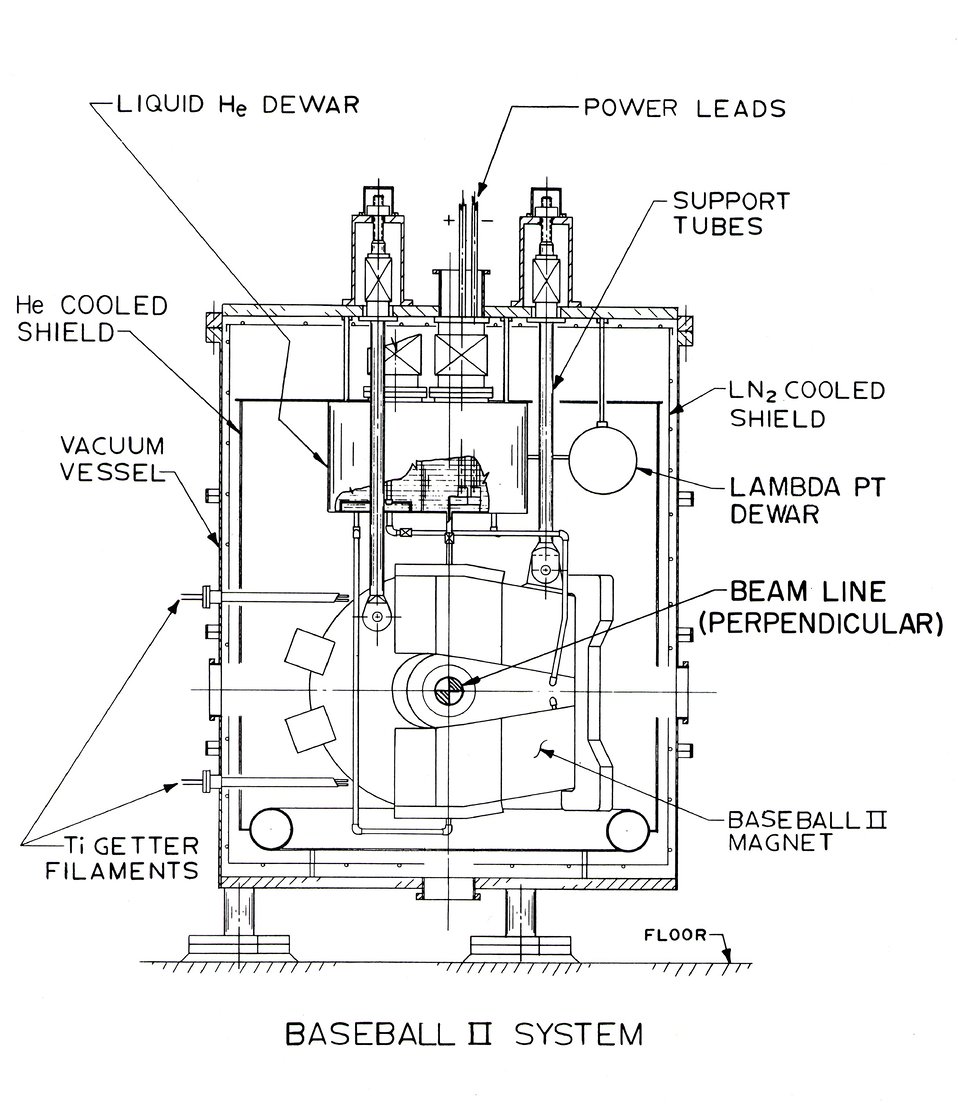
Plasma confinement...Baseball II System...The basic requirement for the success of controlled fusion is that the ionized gas can be confined at a temperature between 100 million and 1 billion degrees--many times hotter than the center of the sun--for a time period long enough to achieve a net release of energy. Circa 1971.